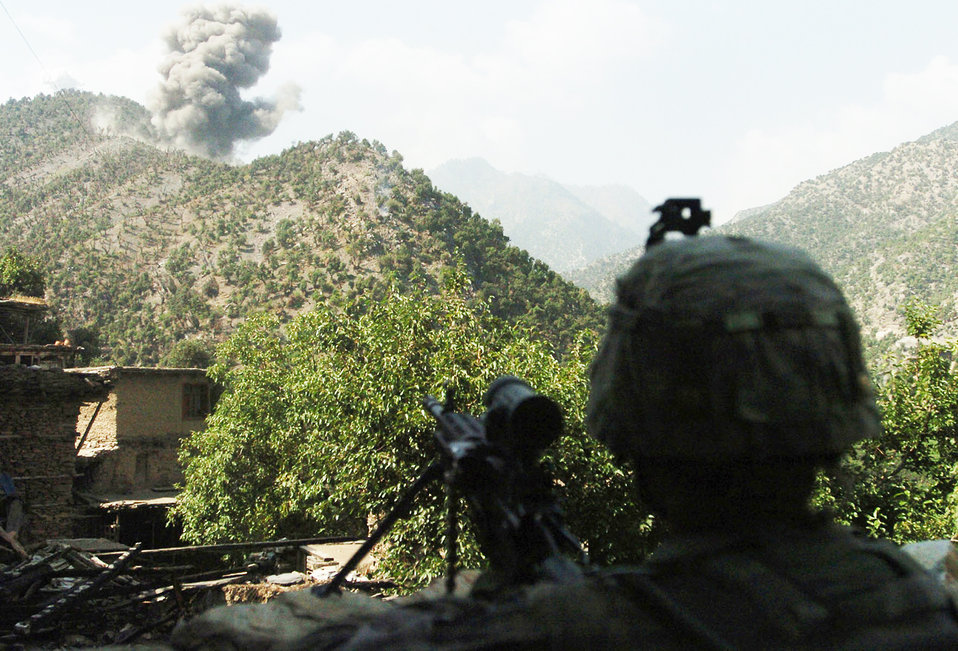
Gunfight and Airstrike in Korengal Valley

A U.S. Army Soldier watches as Air Force F-15E Strike Eagles bomb insurgent positions after a 20-minute gun battle in the Korengal Valley of Afghanistan's Kunar Province Aug. 13. U.S. servicemembers from Company B, 2nd Battalion, 12th Infantry Regiment, 4th Brigade Combat Team, 4th Infantry Division, routinely engage insurgents in the volatile valley. International Security Assistance Force troops across Afghanistan have increased operations in recent months, in order to ensure safety and security during Afghanistan's second national election, scheduled for the end of August.